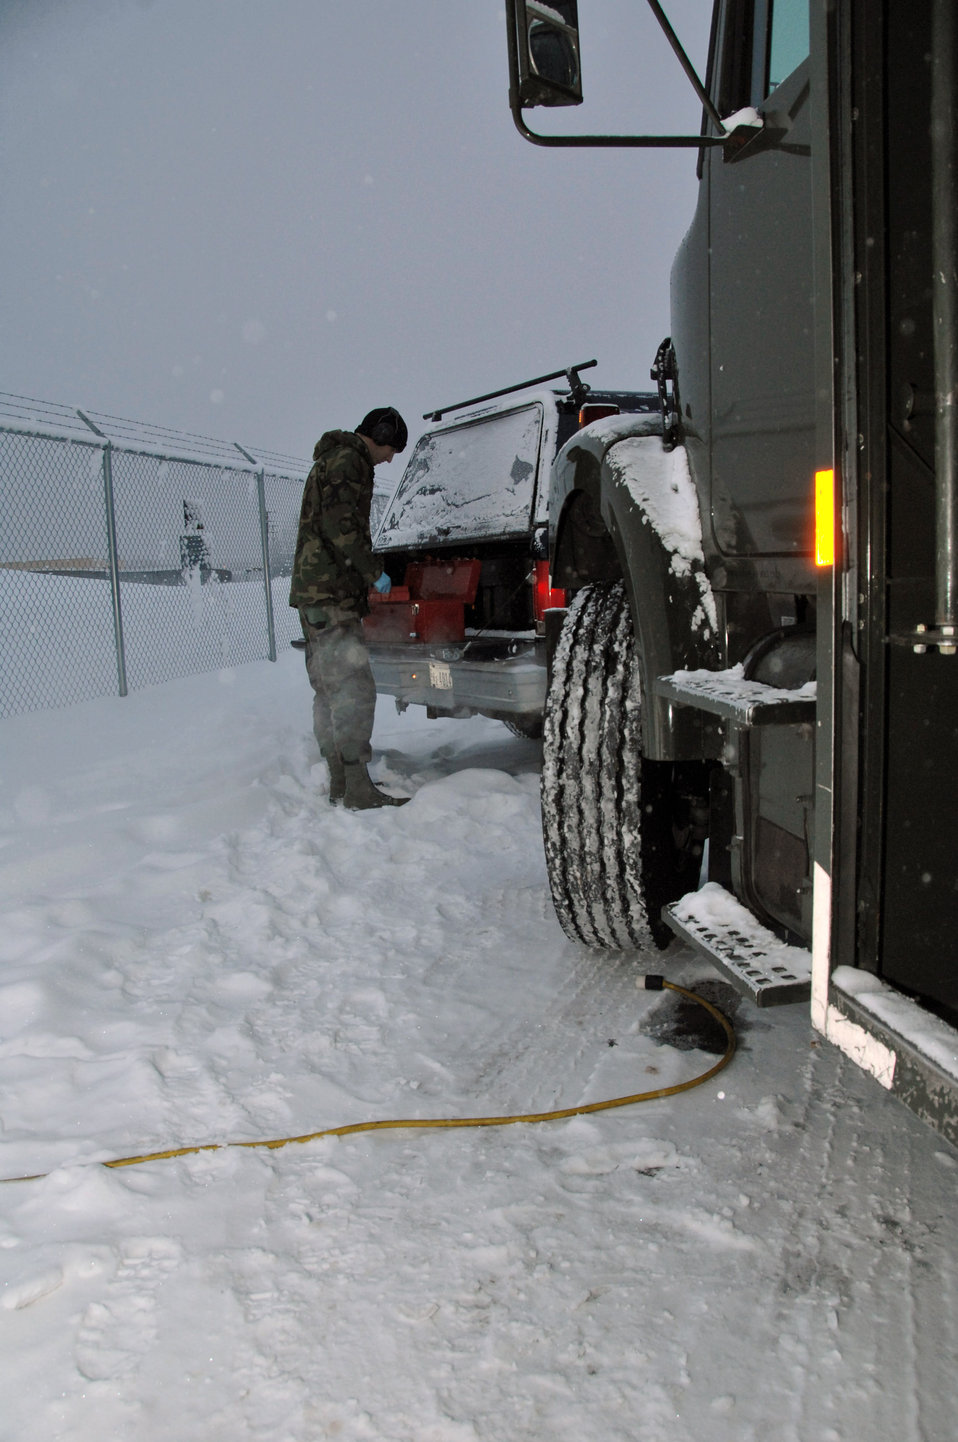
'Fuel Doctor' on duty

Airman 1st Class Sean McDonagh organizes his fuel sampling instruments Oct. 24 at Eielson Air Force Base, Alaska. Making sure the fuel used by the aircraft here at Eielson is always good to go, Airman McDonagh helps assure the process by constantly sampling the fuel lines and the trucks that distribute it to the aircraft. Airman McDonagh is a fuels laboratory technician assigned to the 354th Logistic Readiness Squadron.